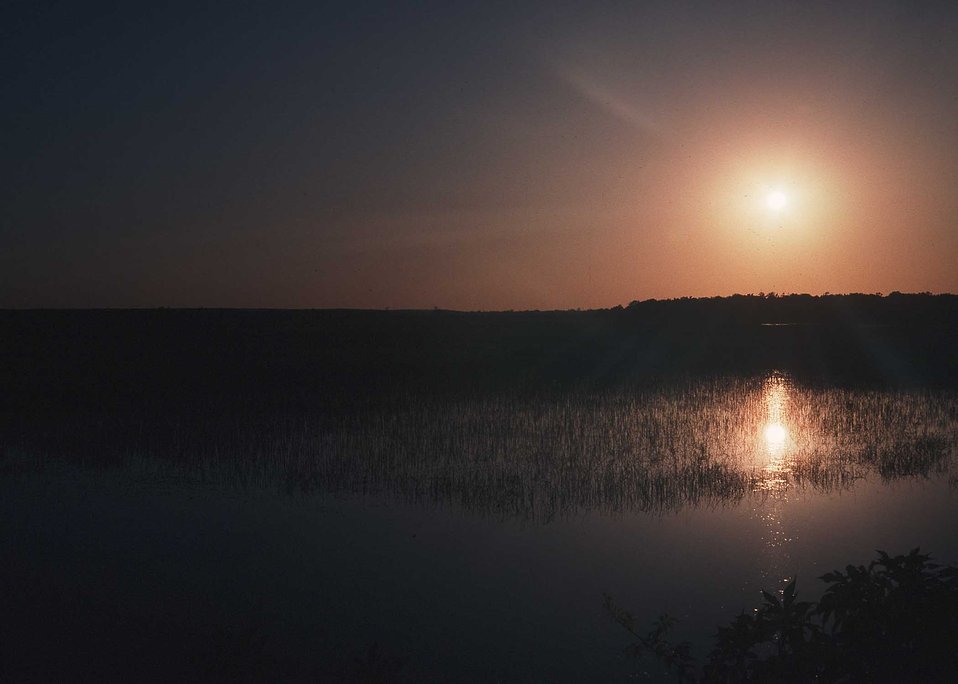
Sunset in Arkansas.